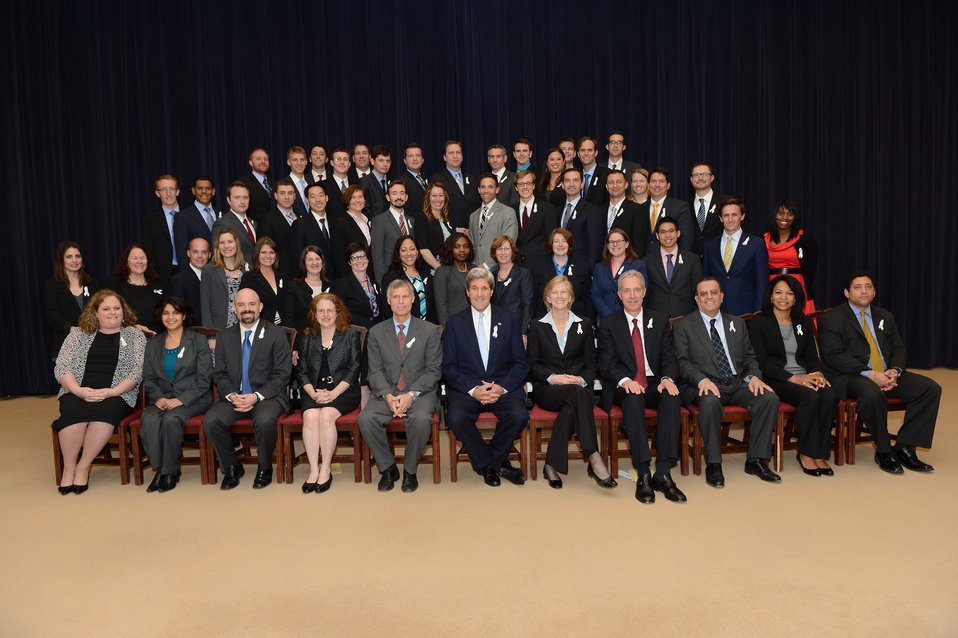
Secretary Kerry Poses for a Photo With the 171st FS Generalist Class

U.S. Secretary of State John Kerry poses for a photo with the 171st FS Generalist Class at the U.S. Department of State in Washington, D.C., on May 3, 2013.